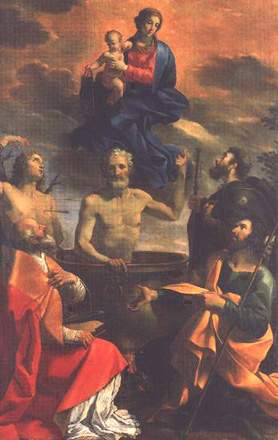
Abbatini Madonna col Bambino e santi